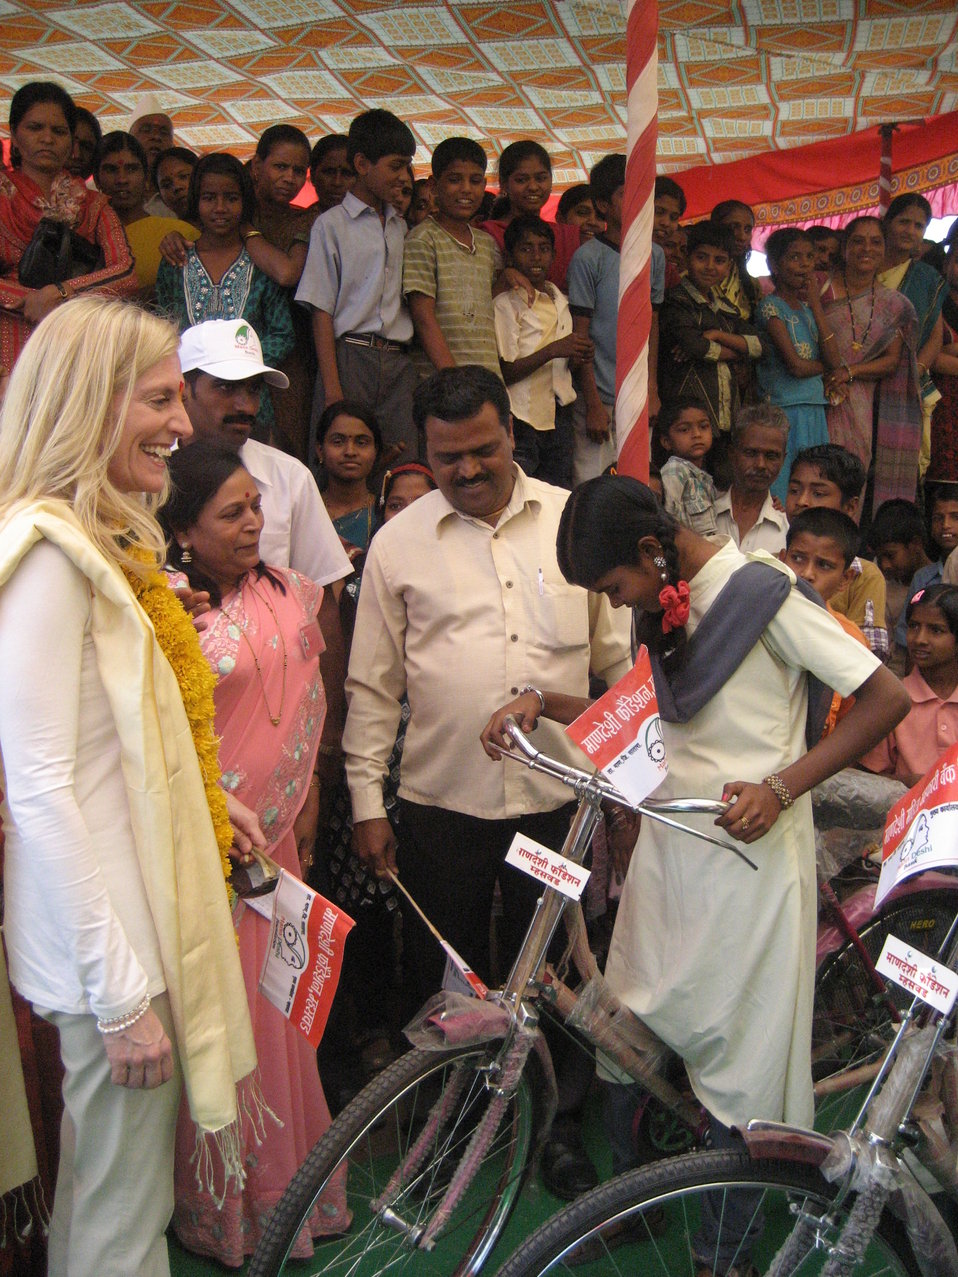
Lael Brainard's Visit to India

On Wednesday, March 2, Under Secretary Brainard saw the bank’s Freedom Ride Program, which provides bicycles to young girls to enable them to travel to school and continue their education.